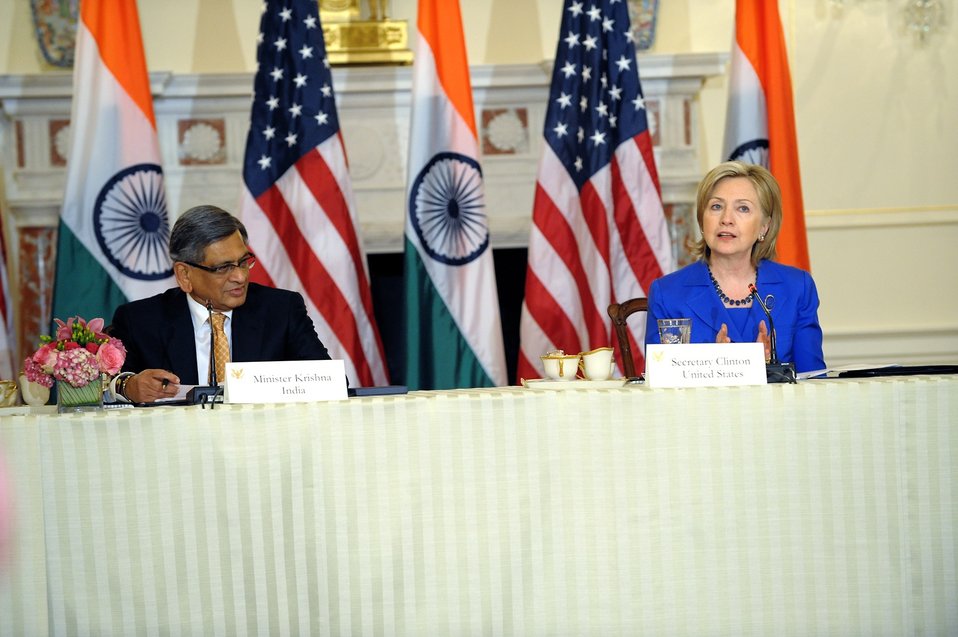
Secretary Clinton Opens Plenary With Indian Minister of External Affairs S.M. Krishna

U.S. Secretary of State Hillary Rodham opens the plenary session of the U.S.-India Strategic Dialogue with Indian Minister of External Affairs S.M. Krishna in the Ben Franklin Room at the U.S. Department of State in Washington, D.C., on June 3, 2010.